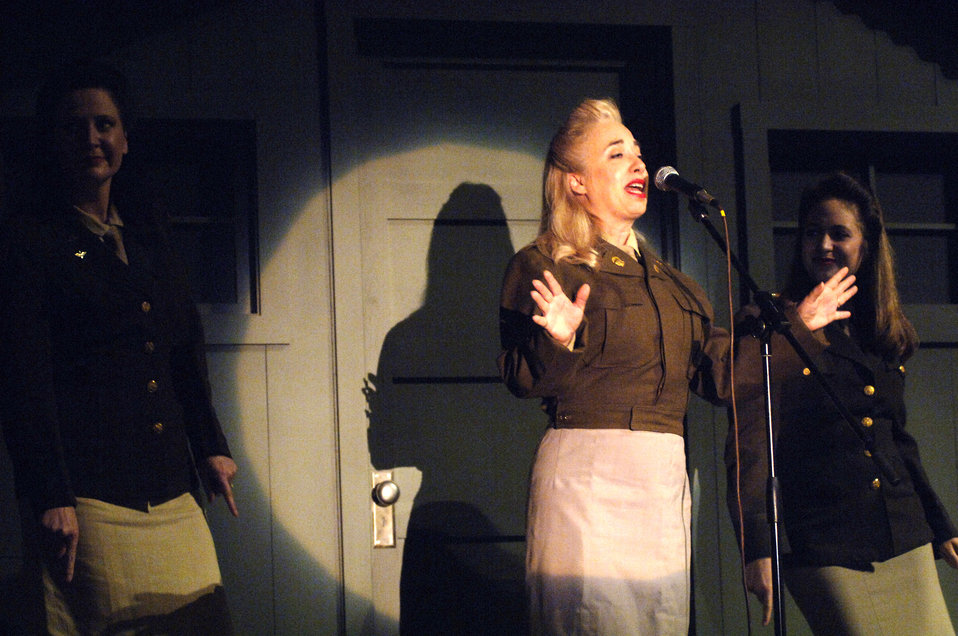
Memorial Day observances

The Memphis Belles accompany the Sentimental Journey Orchestra at a musical tribute to the nation's military members at the Institute of Texan Cultures in San Antonio on Sunday, May 28, 2006. More than 800 people attended the show on Memorial Day weekend.